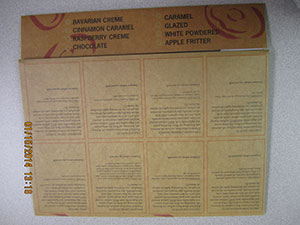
RECALLED – All Varieties of Donuts, Cinnamon Donut Holes, and Mixed Nut Candy

January 17, 2014 – Product Recall – Rise’N Roll Bakery Issues Allergy Alert on Undeclared Egg in All Their Donut Varieties and Undeclared Peanuts in Nutty Crunch.